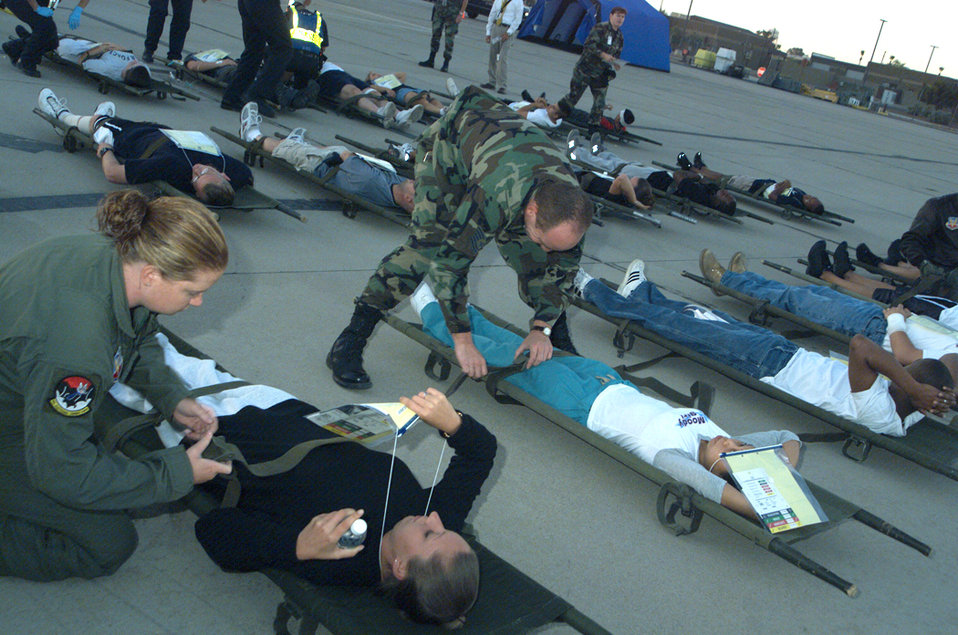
Medics 'exercise' their skills

DAVIS-MONTHAN AIR FORCE BASE, Ariz. -- Airmen simulate injuries sustained from a terrorist explosion as medics attend to them as part of an exercise here.